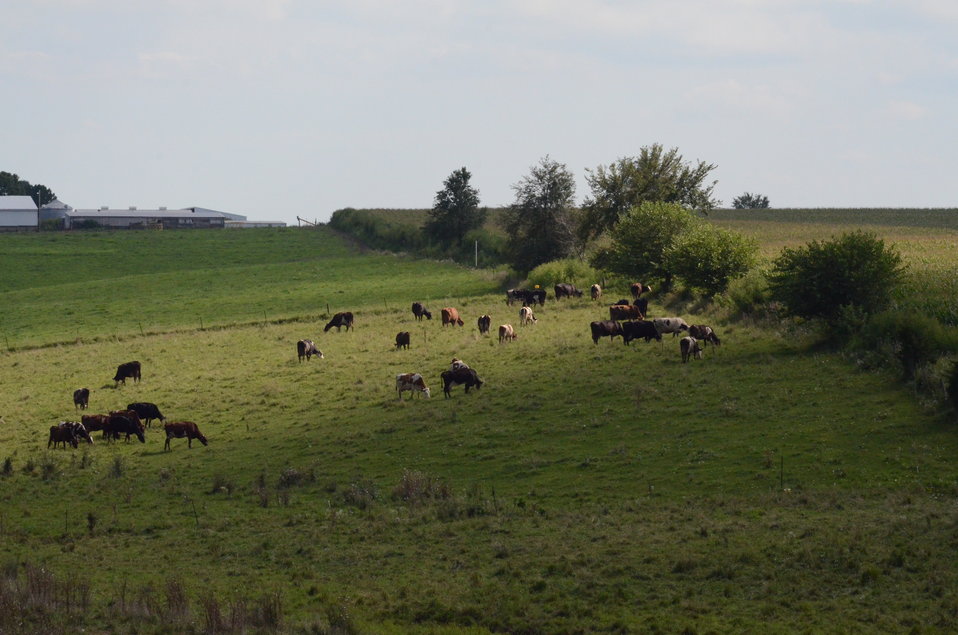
Dairy Farm near Poesta, IA, on Tuesday, Aug. 16, 2011.